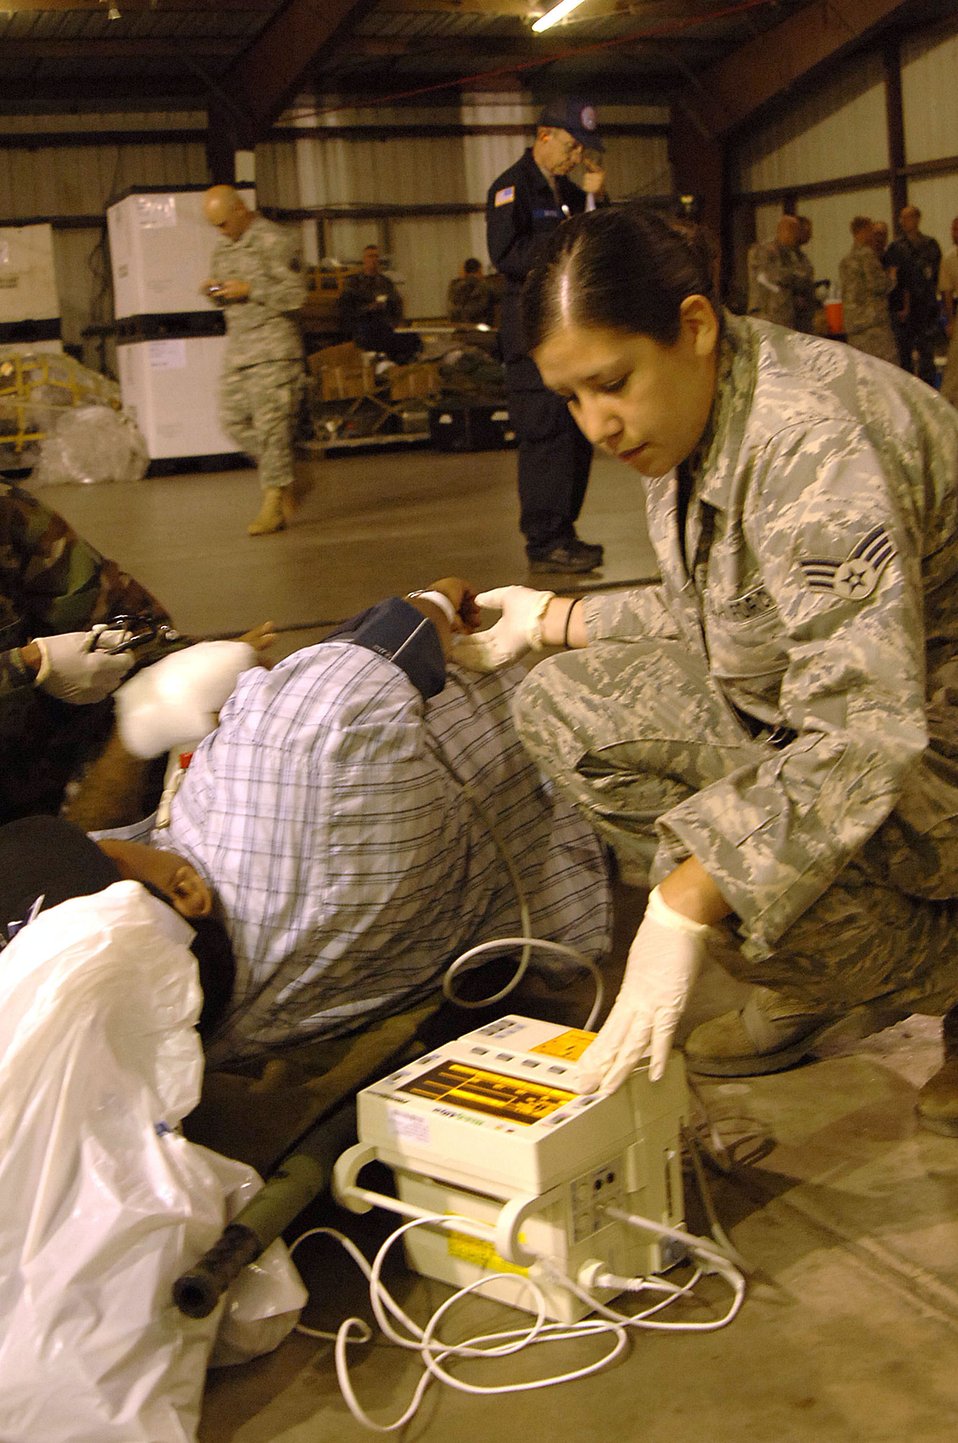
AMC aircraft, personnel supporting Hurricane Ike evacuations

Senior Airman Andrea Moore tends to a patient waiting for evacuation in Corpus Christi, Texas, Sept. 11. The team is helping to evacuate patients from a local area hospital. Air Force aircraft transported patients to safe locations out of Hurricane Ike's path. Airman Moore is a medical technician with a mobile aeromedical staging facility team from MacDill Air Force Base, Fla.